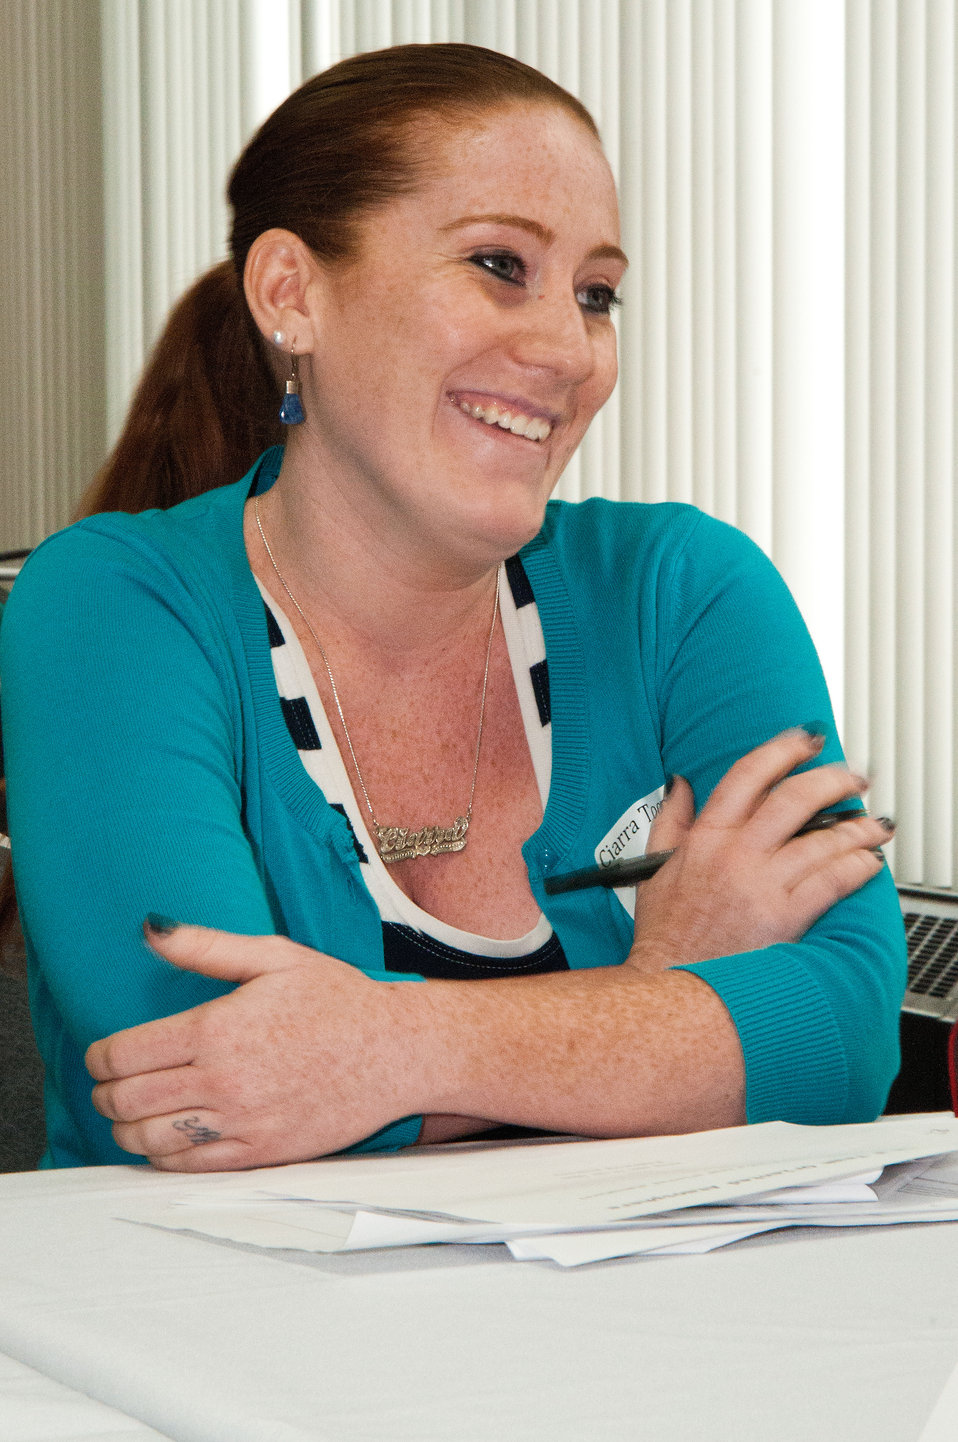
U.S. Department of Agriculture (USDA) Office of General Counsel (OGC) Ciarra Toomey smiles in response to a question asked at USDA's Office of Human Resources Management Virtual University’s Fall Flash Mentoring Event at USDA in Washington, D.C. on Thursday, Sept. 6, 2012.